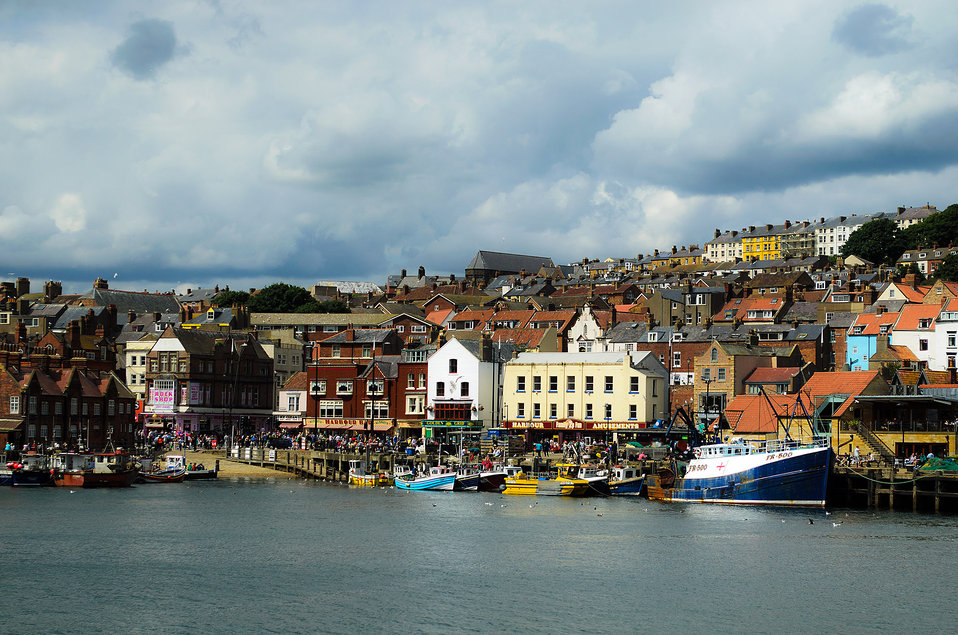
City and sea.